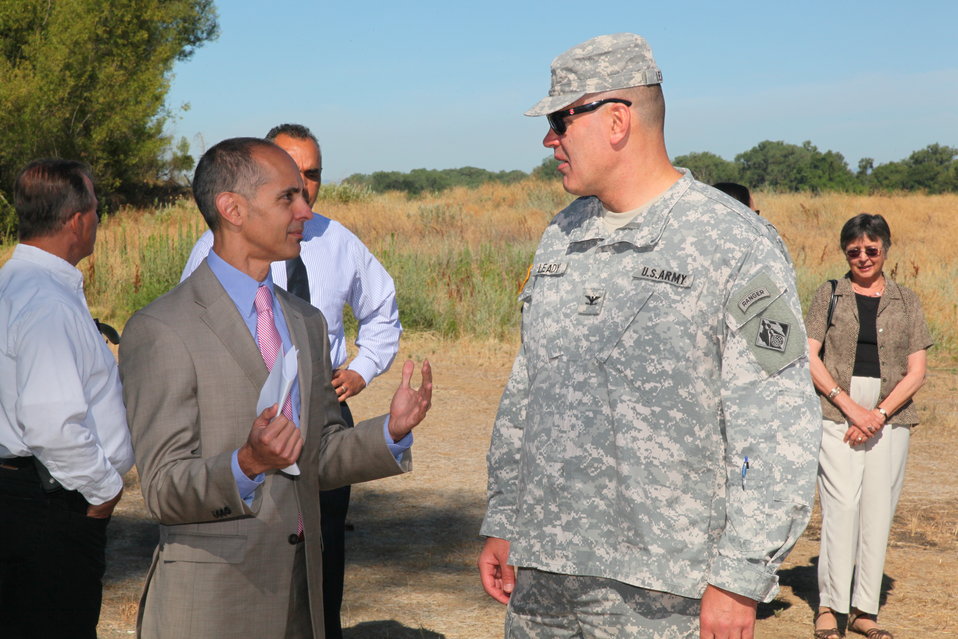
Celebrating West Sacramento levee improvements

City of West Sacramento Mayor Christopher Cabaldon (left) welcomes U.S. Army Corps of Engineers Sacramento District commander, Col. Bill Leady, to a ribbon-cutting ceremony for the completion of levee improvements in West Sacramento, Calif., June 26, 2012. The $27 million projects, managed by the West Sacramento Area Flood Control Agency, improved the levees along the Sacramento Bypass and the Sacramento River in the north part of the city.